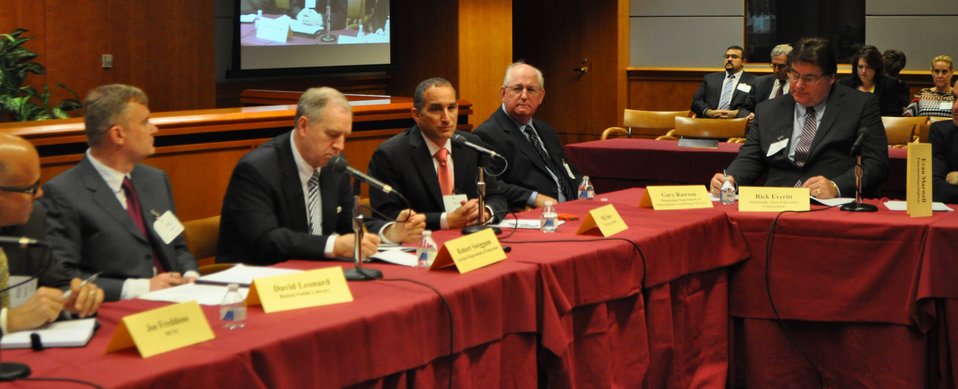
5.6.2014 E-Rate Modernization Workshop

Education and Library Technology Experts Roundtable: Enabling the Lowest “E-rate” for Schools and Libraries